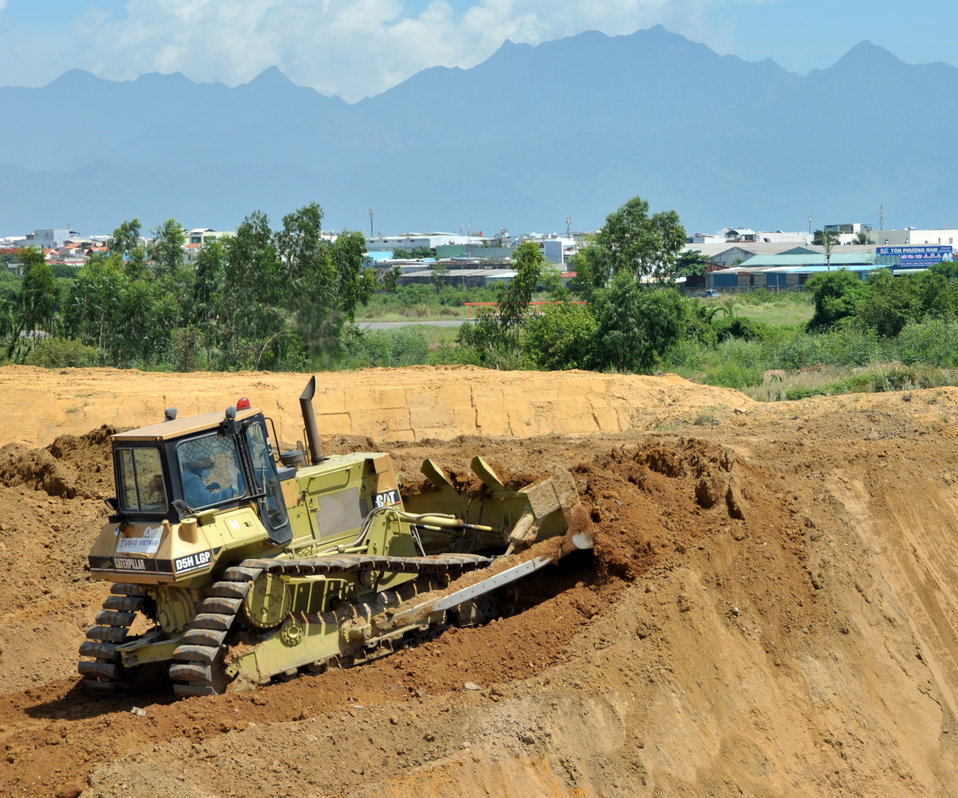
Environmental Remediation Progress at the Danang Airport site

Progress at the Remediation of Dioxin Contamination Project Site

Danang, Vietnam, June 5, 2013